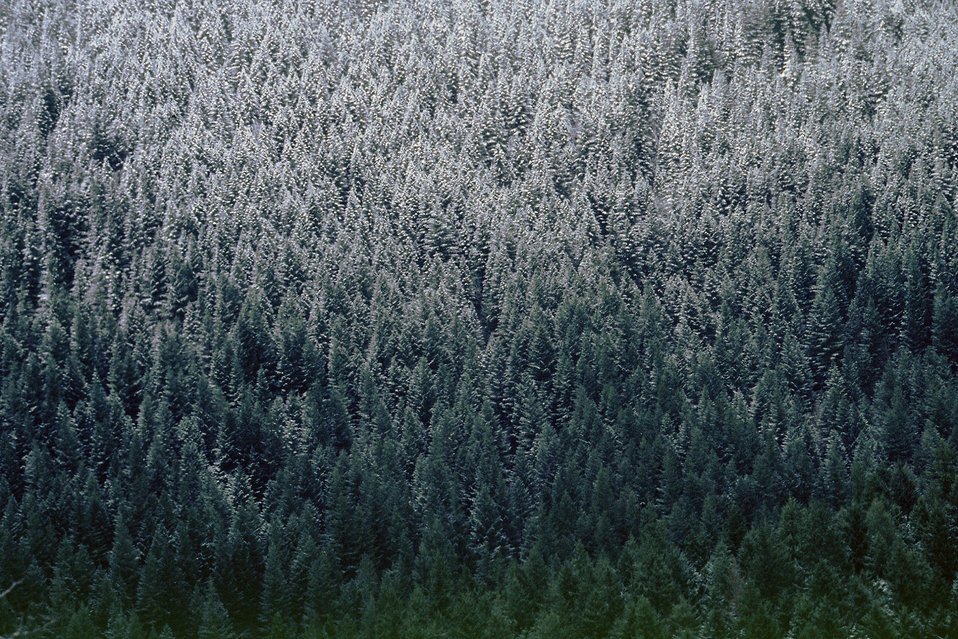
Mid Winter forest scene in the Mollala Corridor.